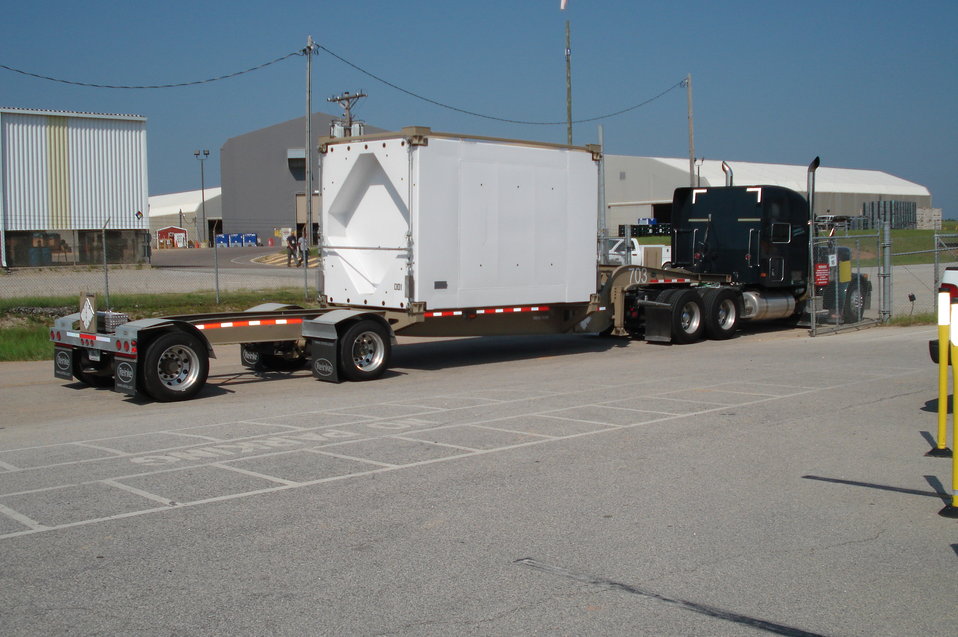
TRUPACT-III at Savannah

Workers remove a TRUPACT-III shipping package from a trailer for placement onto a fixed platform for loading large boxes containing legacy transuranic waste for shipment to the Waste Isolation Pilot Plant for safe, permanent disposal.